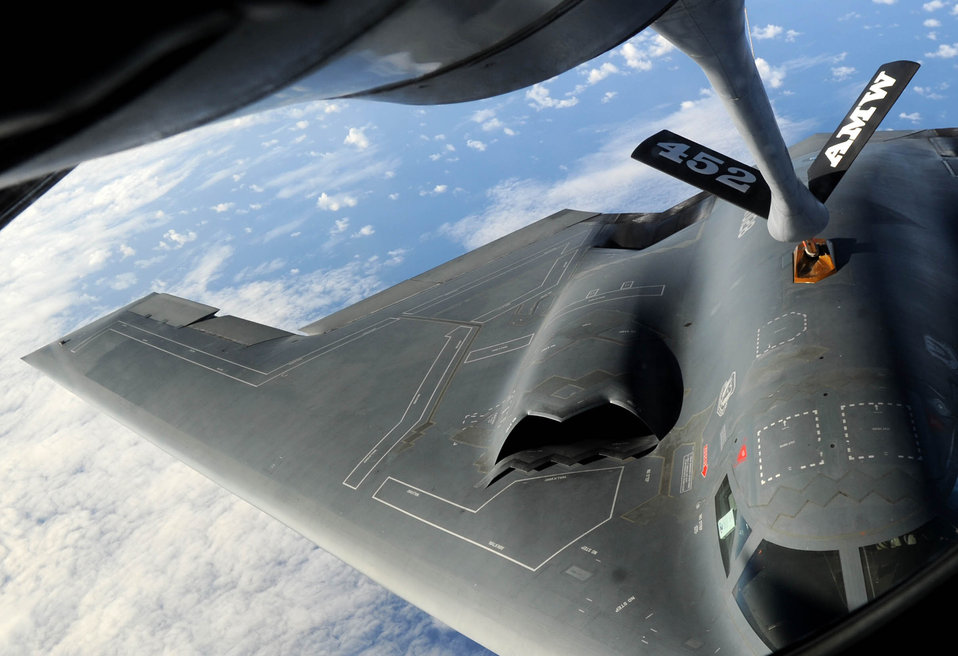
Providing a presence

A KC-135 Stratotanker refuels a B-2 Spirit over the Pacific Ocean May 12 near Andersen Air Force Base, Guam. More than 100 Airmen and four KC-135s from the 452nd Air Mobility Wing at March Air Reserve Base, Calif., arrived at Andersen AFB at the end of April for deployment.